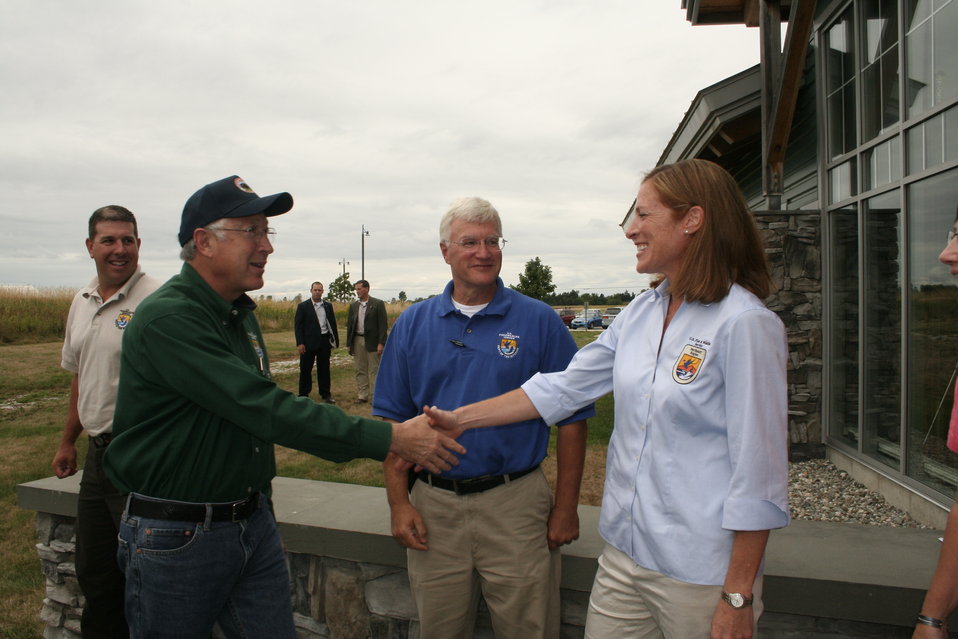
Acting Northeast Regional Director Wendi Weber welcomes Secretary Salazar to Mississquoi NWR

Acting Regional Director Wendi Weber welcomes Secretary Salazar to Missisquoi Natoinal Wildlife Refuge.